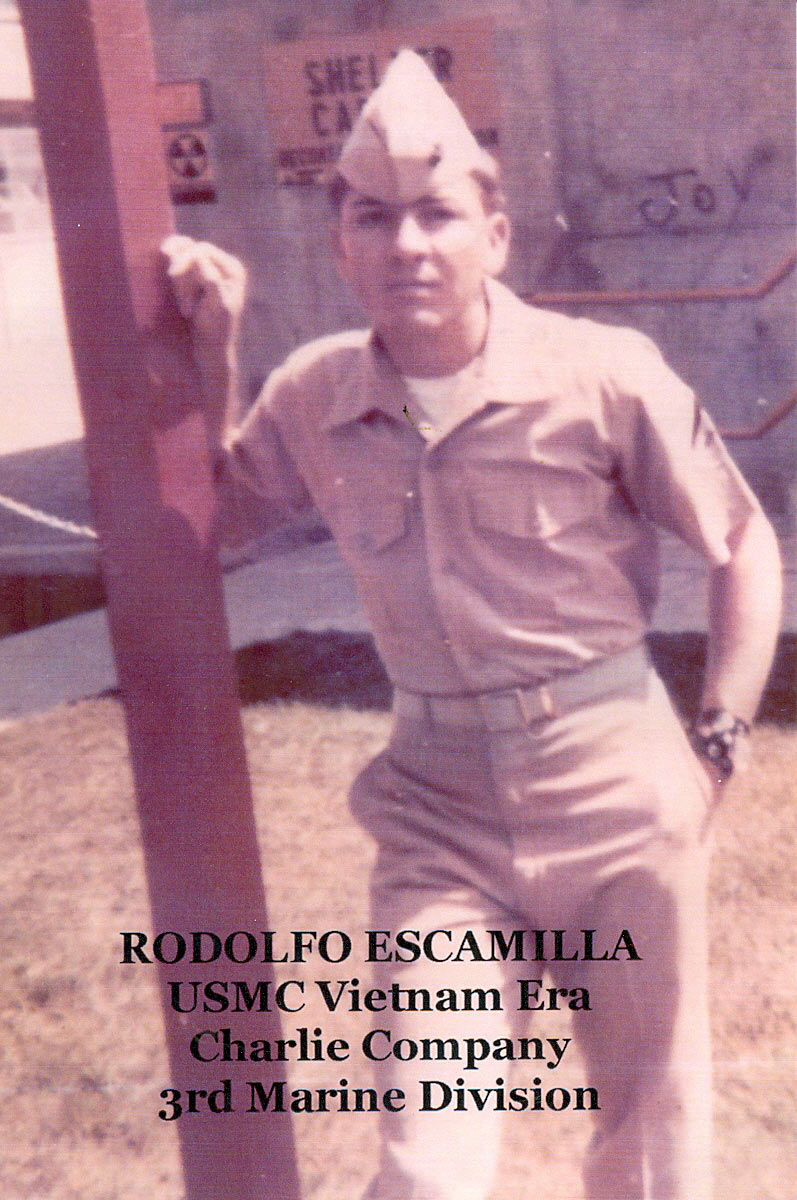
Rudy Escamilla Southwest Region

Rudy Escamilla works in the Maintenance Program at Laguna Atascosa National Wildlife Refuge in Texas.